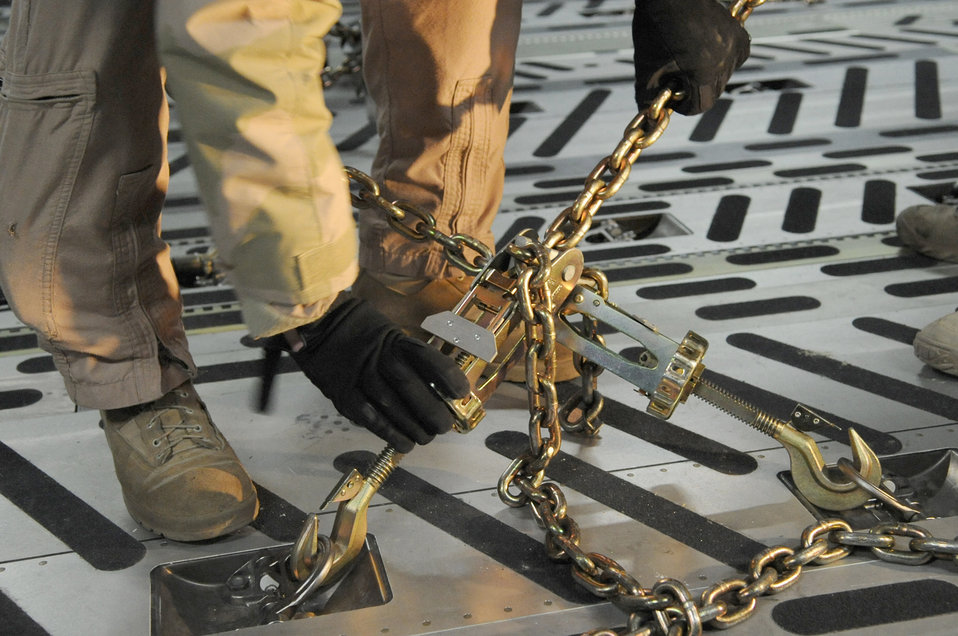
Three-day mission

Staff Sgt. Jeremiah Thompson secures the chains after loading Lithuanian army vehicles on a C-17 Globemaster III Dec. 9, 2010, at Kabul, Afghanistan. The mission to deliver supplies will span about 7,000 miles covering the countries of Hungary, Poland, Afghanistan and Lithuania with more than 75,000 tons of cargo. Sergeant Thompson is assigned to the Heavy Airlift Squadron at Papa, Hungary.